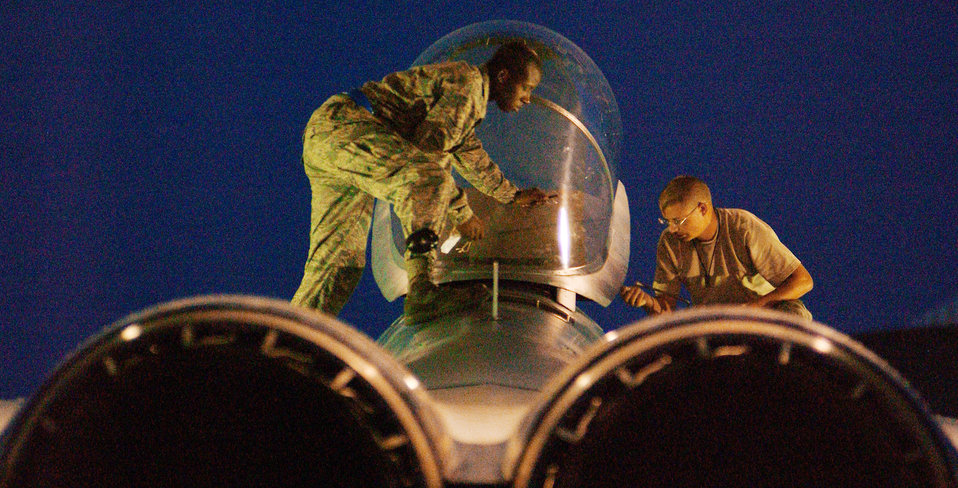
By dawn's early light

Airmen from the 44th Aircraft Maintenance Unit inspect an F-15 Eagle in the early morning hours at Kadena Air Base, Japan Oct. 19, 2009, during a local operational readiness exercise. The 18th Wing is participating in the exercise to test the readiness of Kadena Airmen.